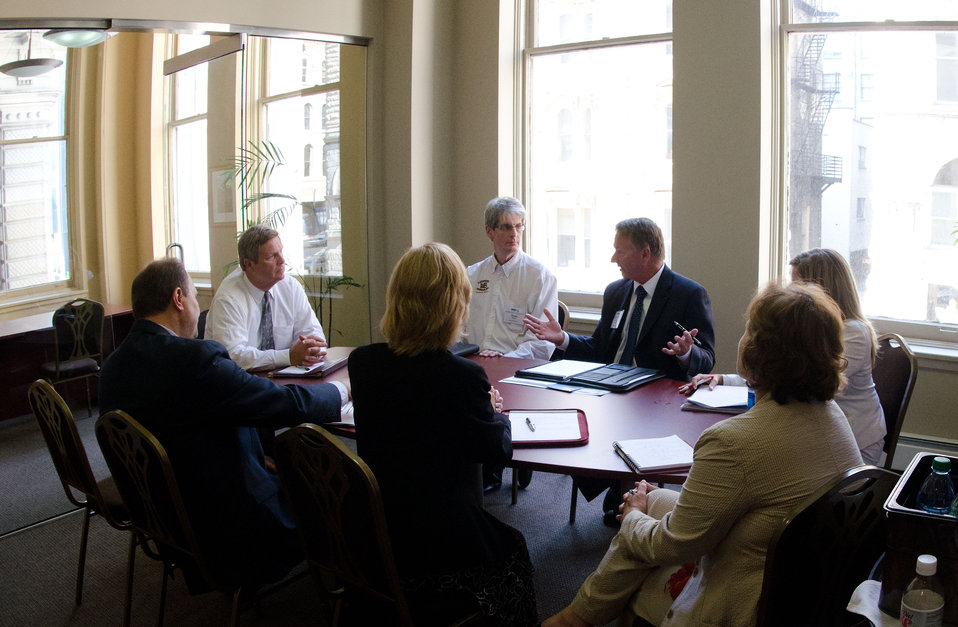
Agriculture Secretary Tom Vilsack meets with NEI participating companies after speaking at the National Export Initiative (NEI) Small Business Tour in Milwaukee, WI, on Wednesday, August 3, 2011. An important goal of the NEI is to provide additional assistance to small and medium-sized businesses, which are major drivers of job creation. The NEI is assisting small and medium-sized businesses win more foreign government contracts, find buyers worldwide, participate in more trade missions and trade shows, receive more export financing, and learn new ways to sell products and services overseas.